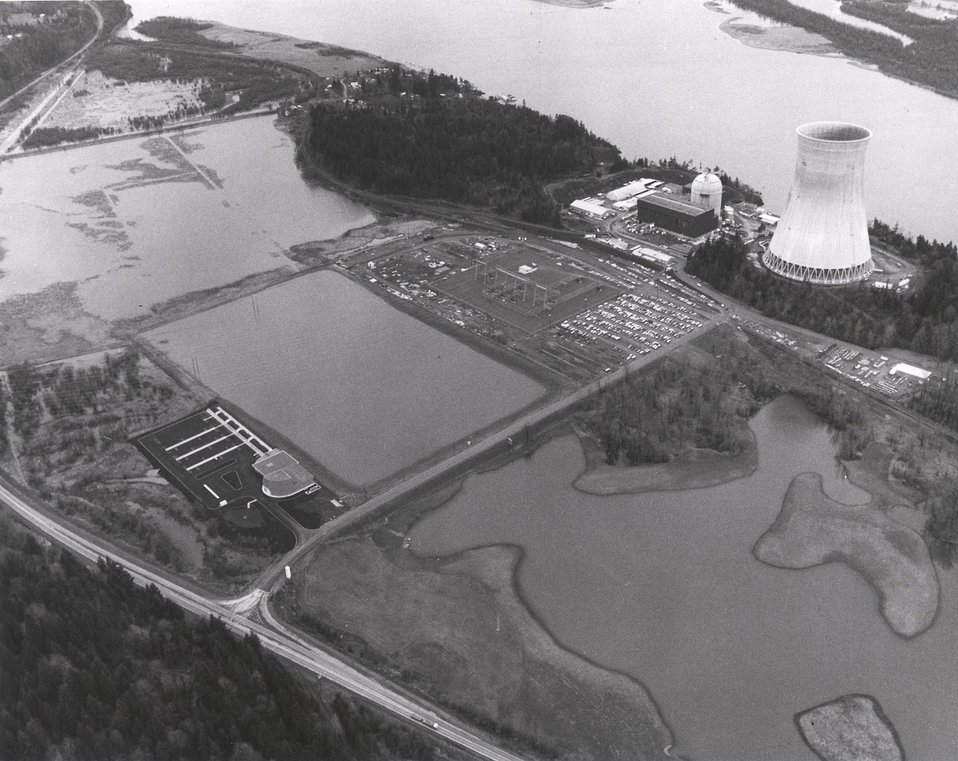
Portland General Electric's Trojan Nuclear Power Plant is located on the Columbia River near Prescott, Oregon. Circa 1974